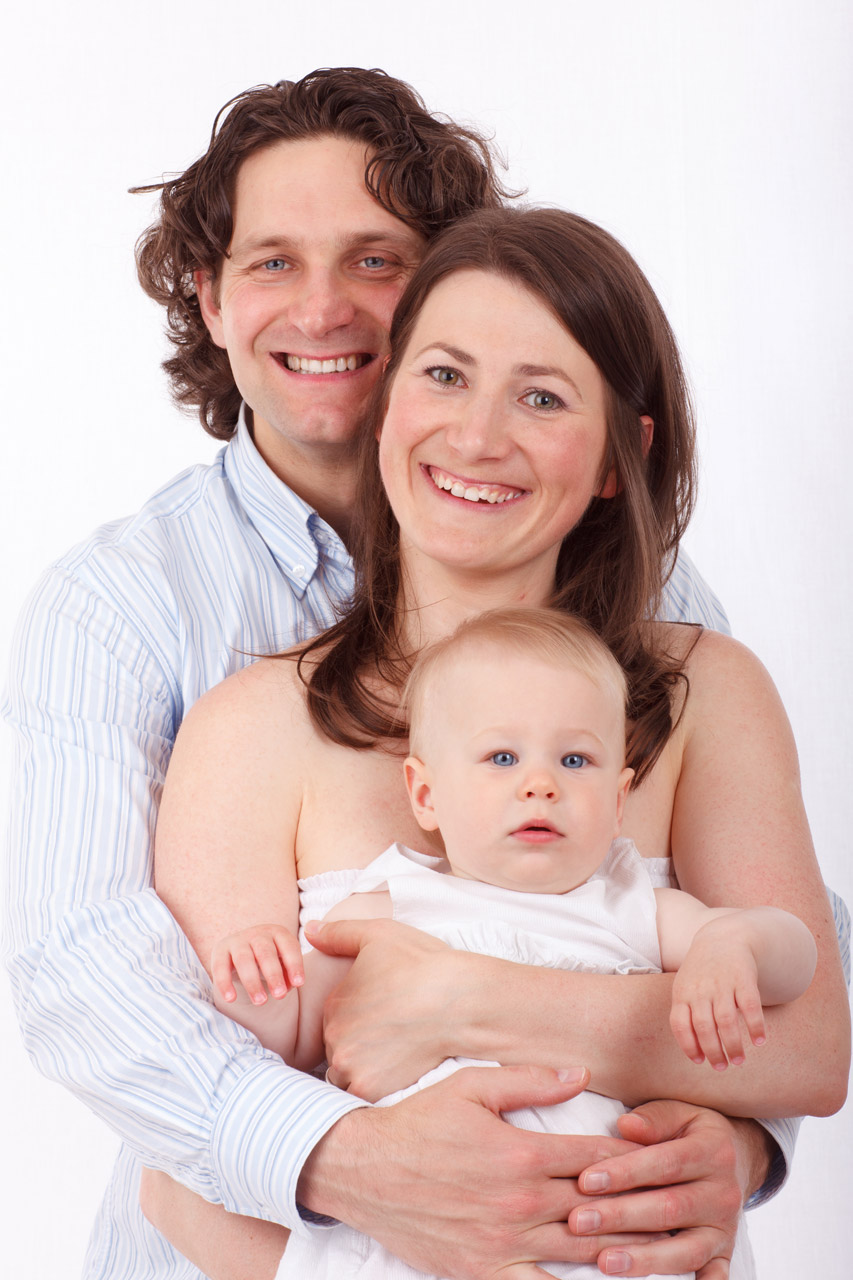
Father mother and baby

Family of three portrait isolated on white background.